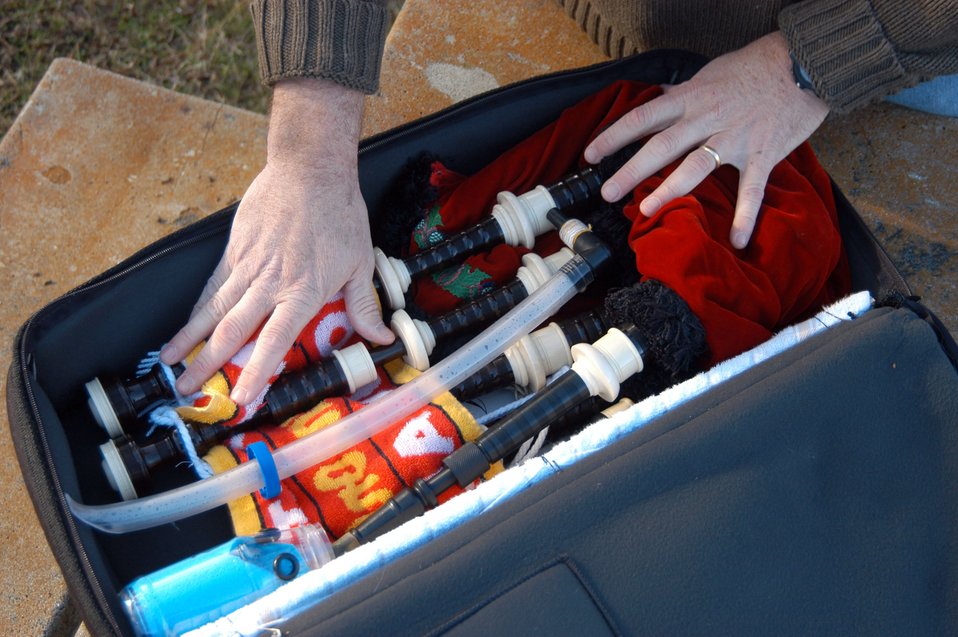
Joint Stars Airman plays bagpipes

ROBINS AIR FORCE BASE, Ga. (AFPN) -- Lt. Col. Skip Blumenthal practices playing bagpipes at least half an hour four or five days a week, usually in his backyard.